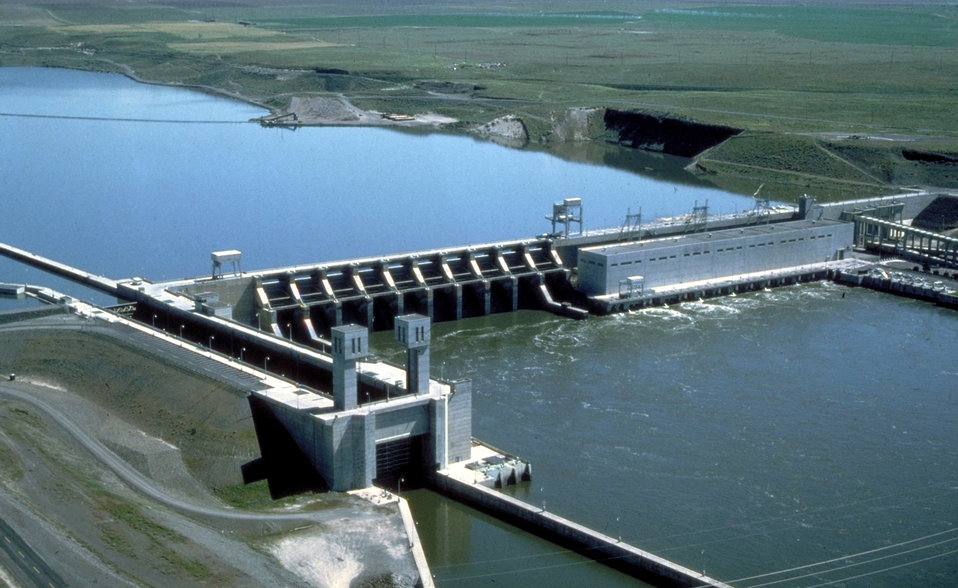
Ice Harbor Dam in Snake River, Washington.